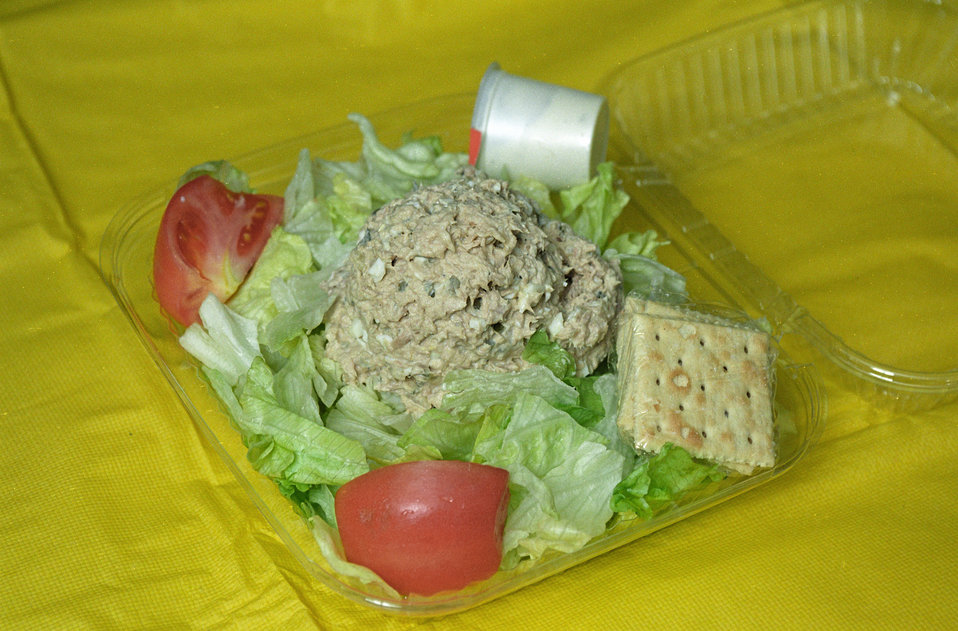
A nutritious lunch is prepared at a school in St. Petersburg, FL on January 15, 2003. The U.S. Department of Agriculture's (USDA) Food and Nutrition Service (FNS) Fresh Fruit and Vegetable Program (FFVP) was introduced to schools in 2003. The FFVP provides all children in participating schools with a variety of free fresh fruits and vegetables throughout the school day. It is an effective and creative way of introducing fresh fruits and vegetables as healthy snack options. The FFVP also encourages schools to develop partnerships at the State and local level for support in implementing and operating the program. The Goal of the FFVP is to create healthier school environments by providing healthier food choices, expand the variety of fruits and vegetables children experience, increase children’s fruit and vegetable consumption, and make a difference in children’s diets to impact their present and future health.